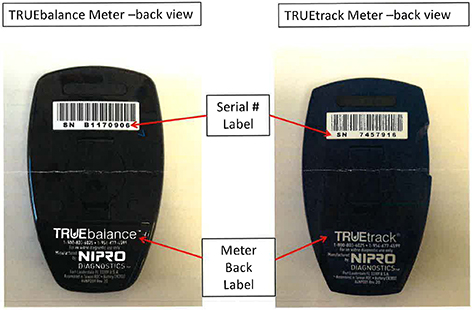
RECALLED – Blood Glucose Meters

January 2, 2014 – Product Recall – Nipro Diagnostics, Inc. Initiates Voluntary Recall of Certain TRUEbalance and TRUEtrack Blood Glucose Meters.